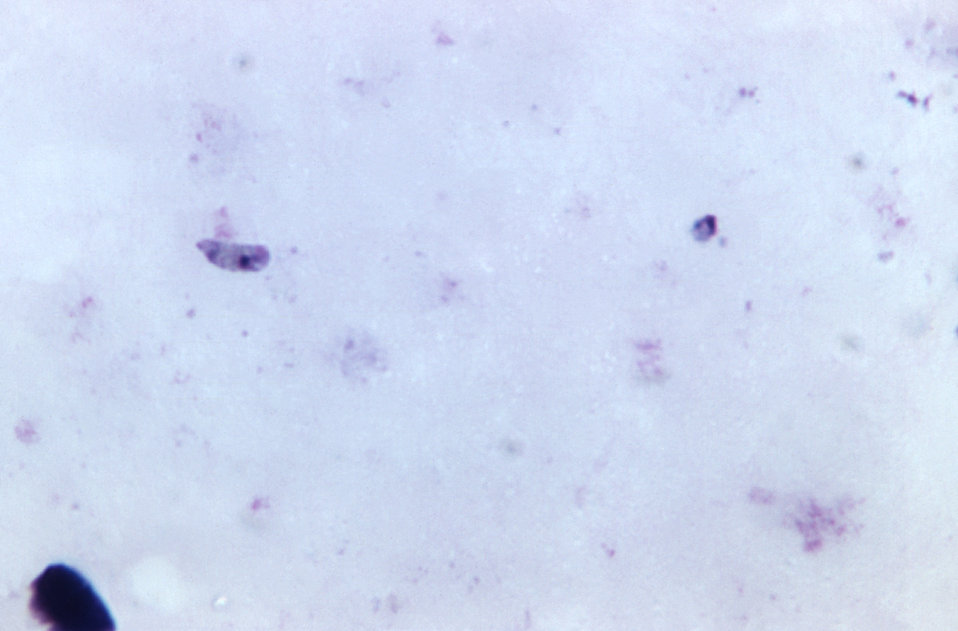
This micrograph shows two species of malarial parasites, P. falciparum and P. malariae, Giemsa stain; Mag. 1125X.